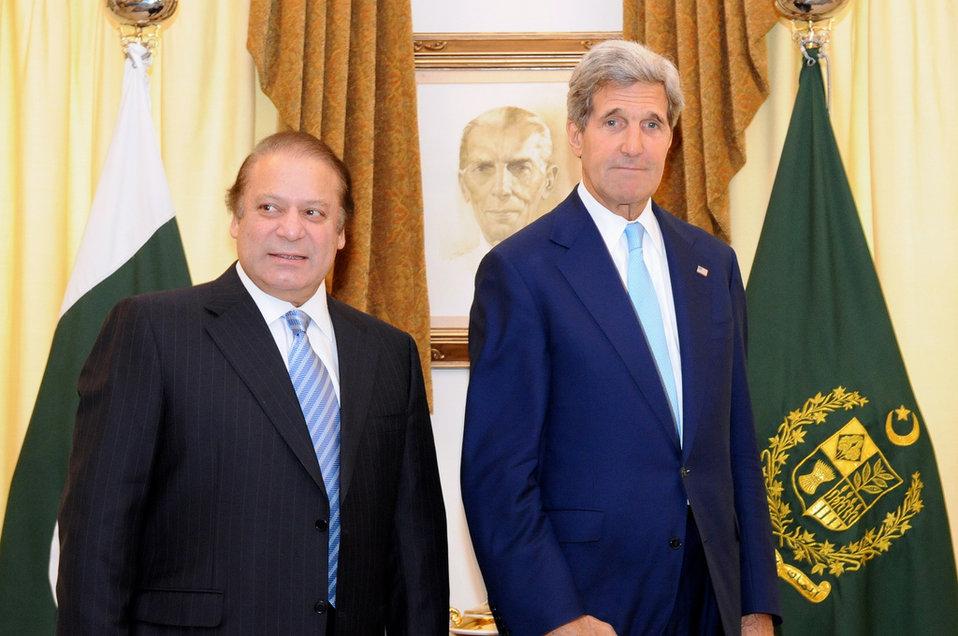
Secretary Kerry Meets With Pakistani Prime Minister Sharif

U.S Secretary of State John Kerry and Pakistani Prime Minister Nawaz Sharif walk to their first first meeting in Islamabad, Pakistan, on August 1, 2013.